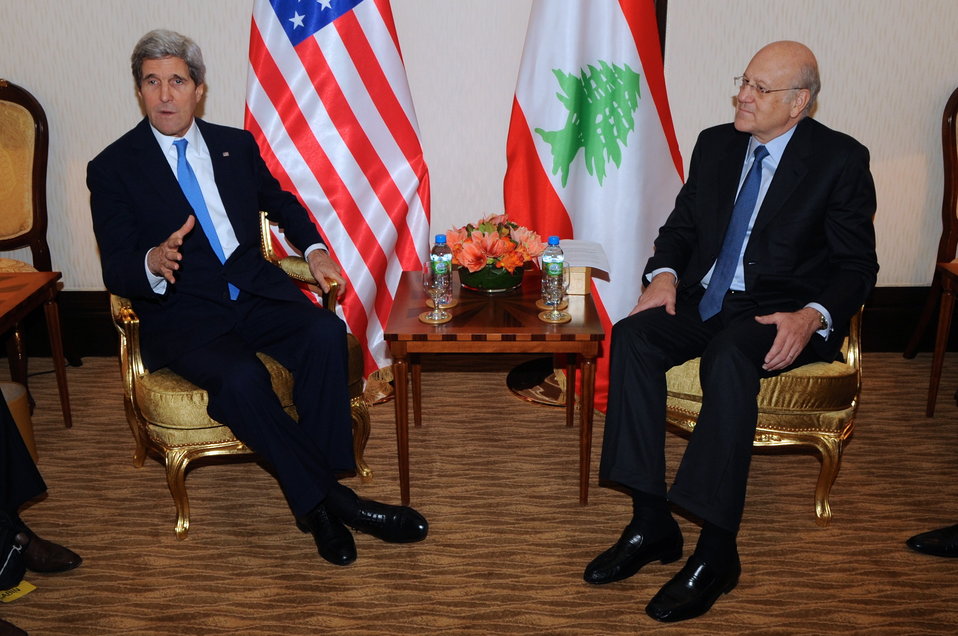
Secretary Kerry Meets With Lebanese Prime Minister Mikati

U.S. Secretary of State John Kerry addresses reporters before a bilateral discussion with Lebanese Prime Minister Najib Mikati amid the Syria Donors' Conference in Kuwait City, Kuwait, on January 15, 2014.